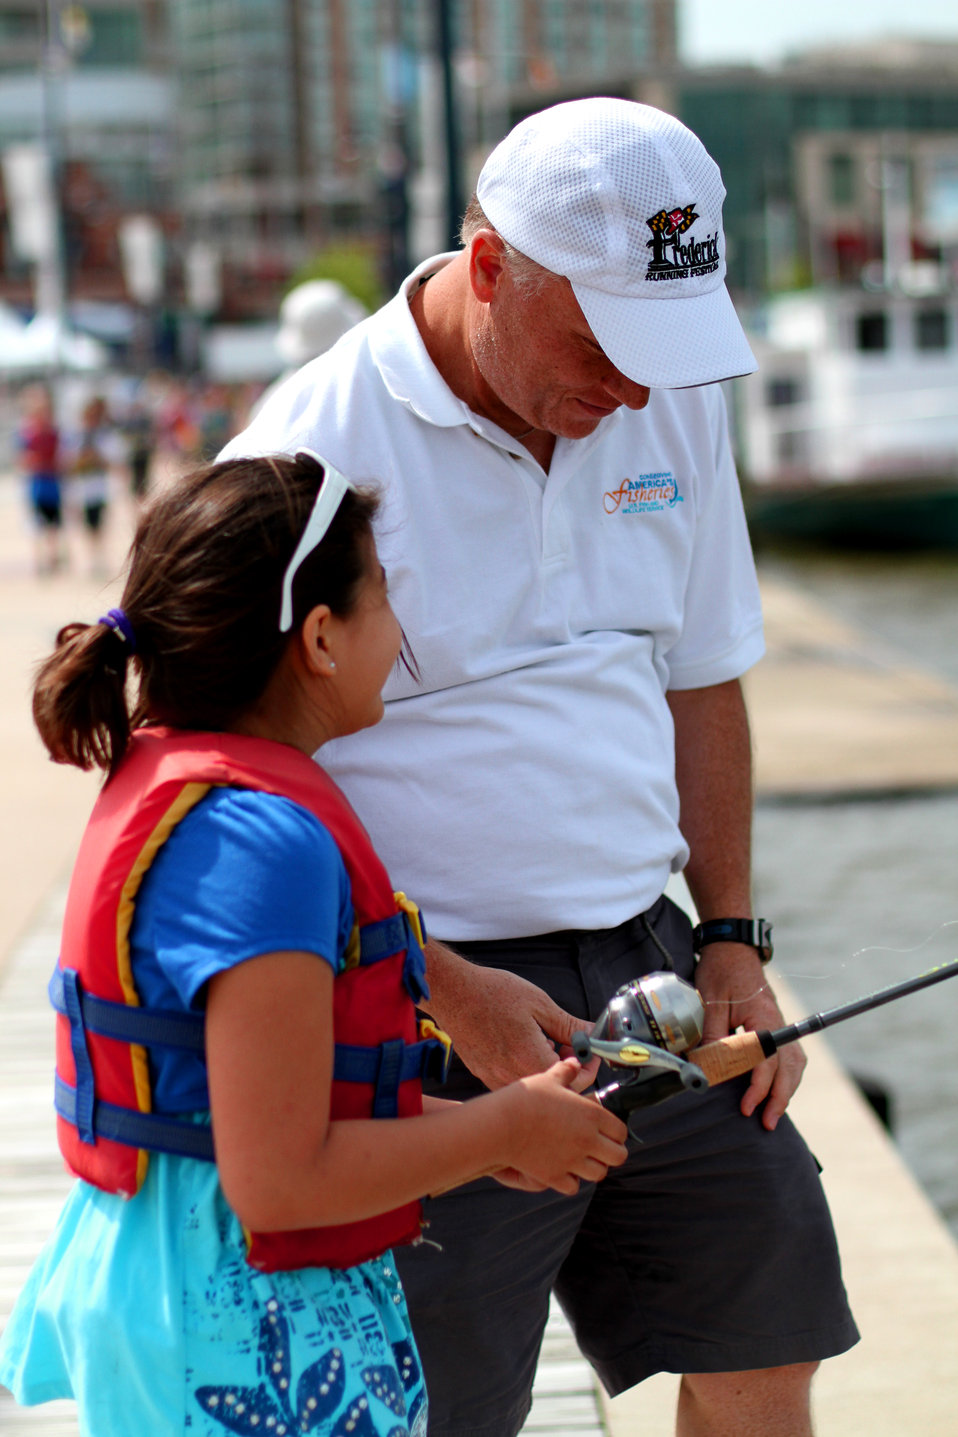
First time fishing, learning how to cast!